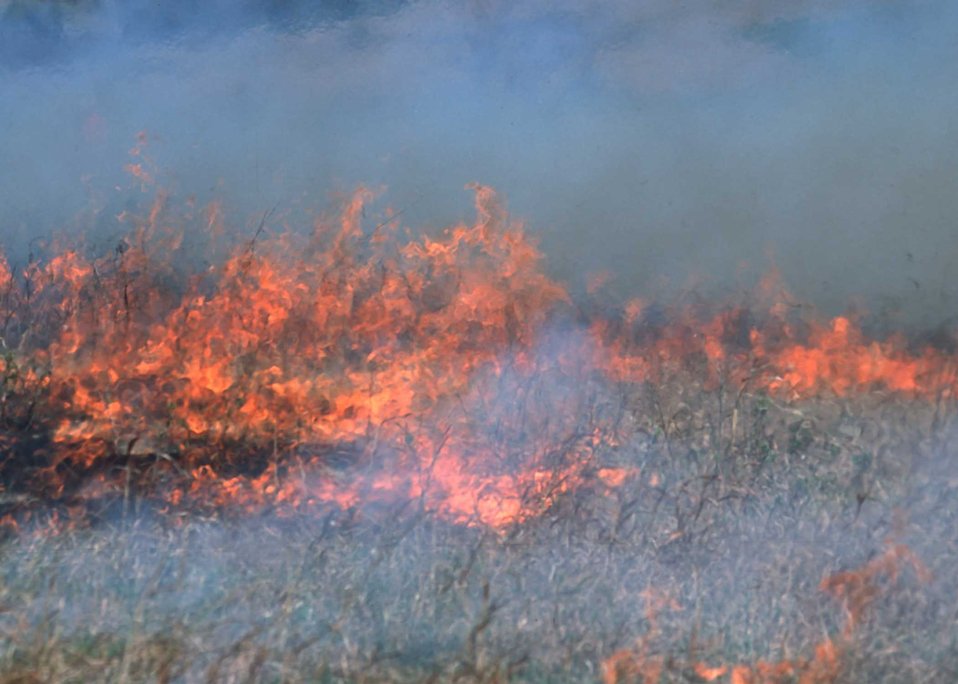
Prairie burn to stimulate new growth and recycle nutrients. Konza Biological Research Station, Manhattan, KS.